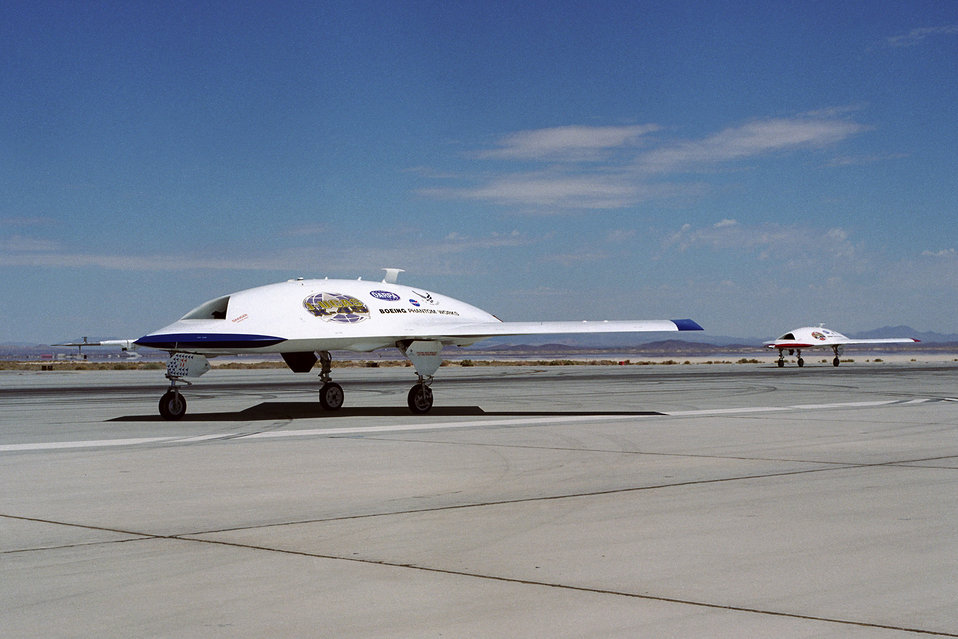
'Line of Sight' test brings out tactical side of X-45A

EDWARDS AIR FORCE BASE, Calif. -- Two X-45As taxi after a flight here. The joint-unmanned-combat-air-systems test team here demonstrated a transfer of command and control using line-of-sight capabilities Jan. 27, showing a more tactical side of the aircraft.